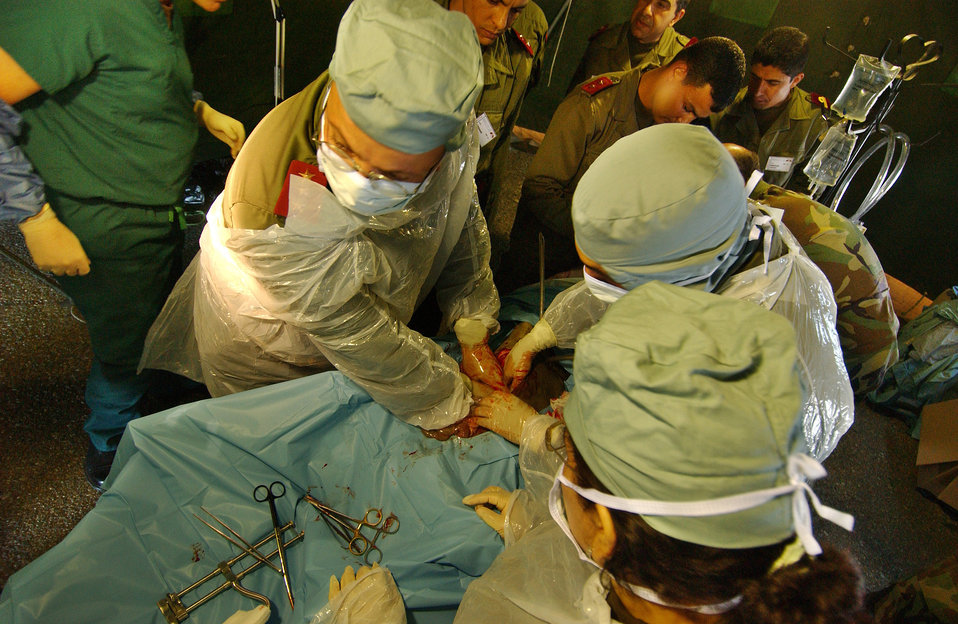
MEDLite 2006

Tunisian military physicians work in field conditions during the mass casualty exercise portion for Exercise MEDLite 2006 at Kharrouba Air Base in Bizerte, Tunisia, Monday, April 3, 2006. MEDLite 2006 provides the opportunity for Air Force medical specialists to exchange medical skills, techniques and procedures with Tunisian military medical personnel.